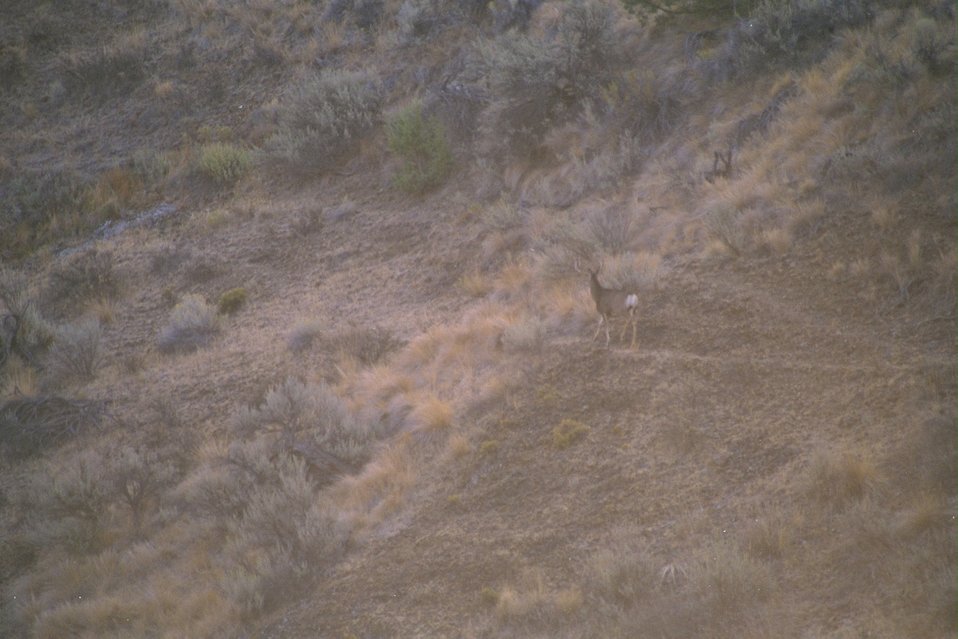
Long shot of a buck deer near the John Day River.l